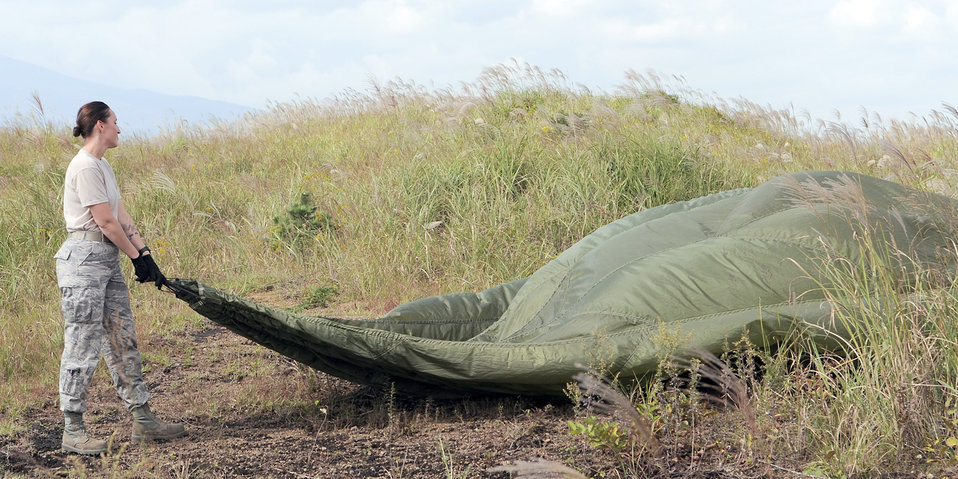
Low Cost Low Altitude training

Staff Sgt. Amber Anderson collects a parachute that was dropped out of a C-130 Hercules during a practice of the low-cost, low-altitude drop technique Oct. 7, 2010, at the Fuji Drop Zone in Japan. Sergeant Anderson is assigned to the 374th Logistic Readiness Squadron combat mobility flight.